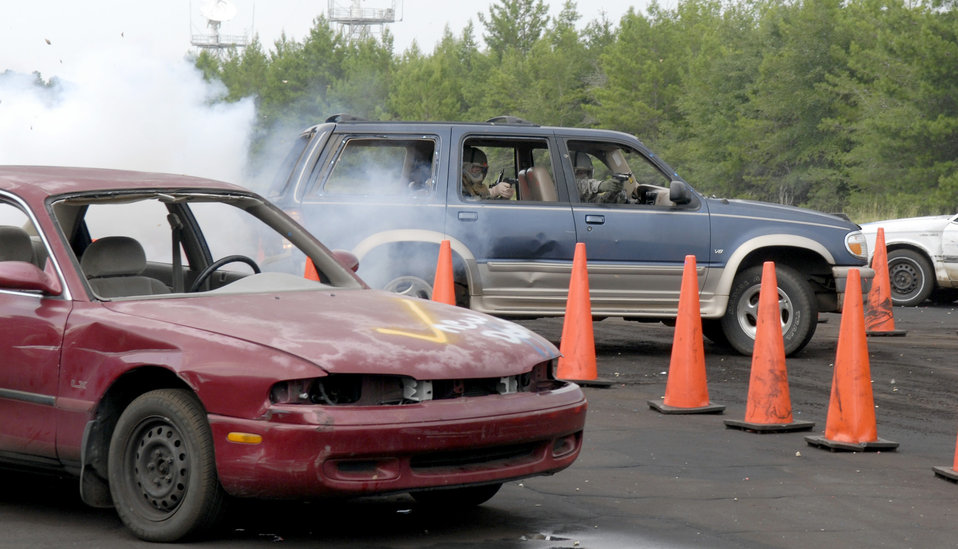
Defensive driving

Students maneuver through the driving course while undertaking smoke bombs and simulated rounds. The course is part of a defensive driving training exercise at Eglin Range, Fla., July 23, 2010.